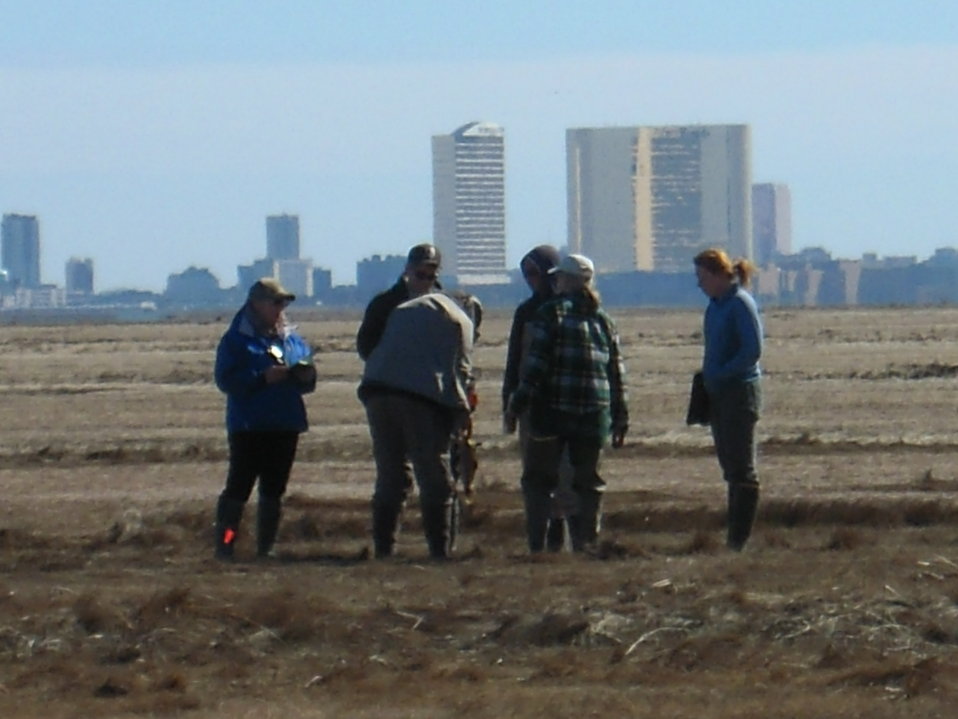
Salt Marsh field work

With Atlantic City as a backdrop, Salt Marsh workshop participants conduct field work.